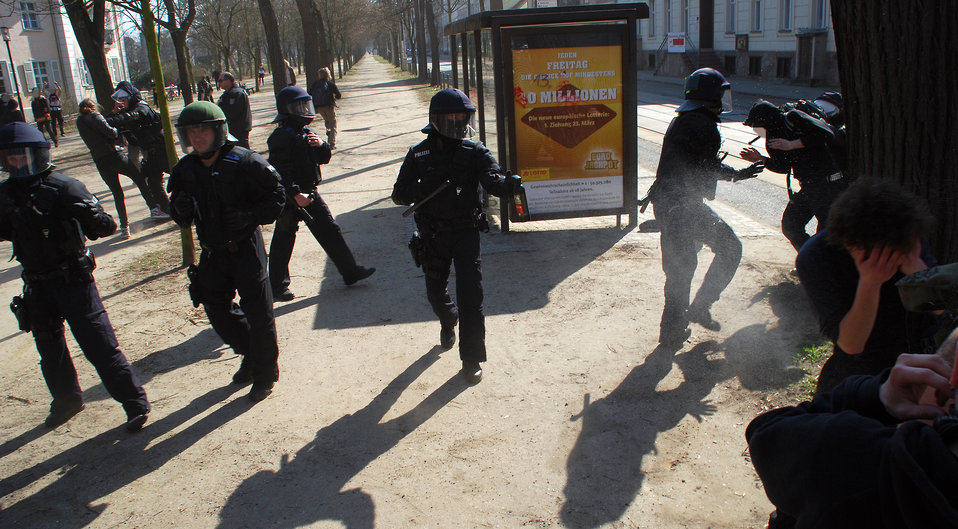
Proteste gegen den Nazi-Aufmarsch am 24.3.2012 in Frankfurt (Oder)